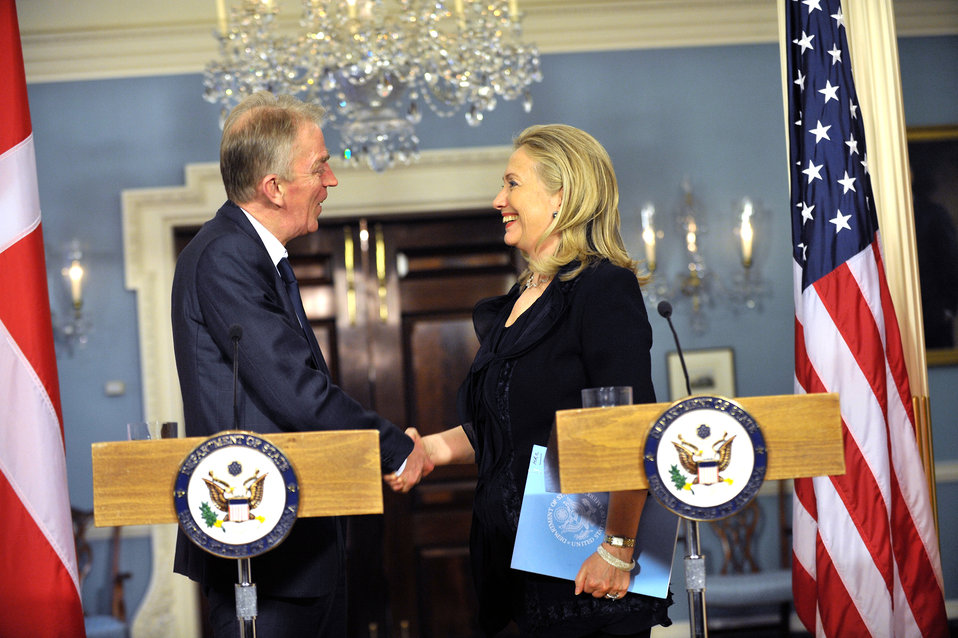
Secretary Clinton Meets With Danish Foreign Minister Sovndal

U.S. Secretary of State Hillary Rodham Clinton meets with Danish Foreign Minister Villy Sovndal, at the U.S. Department of State in Washington, D.C., on December 15, 2011.